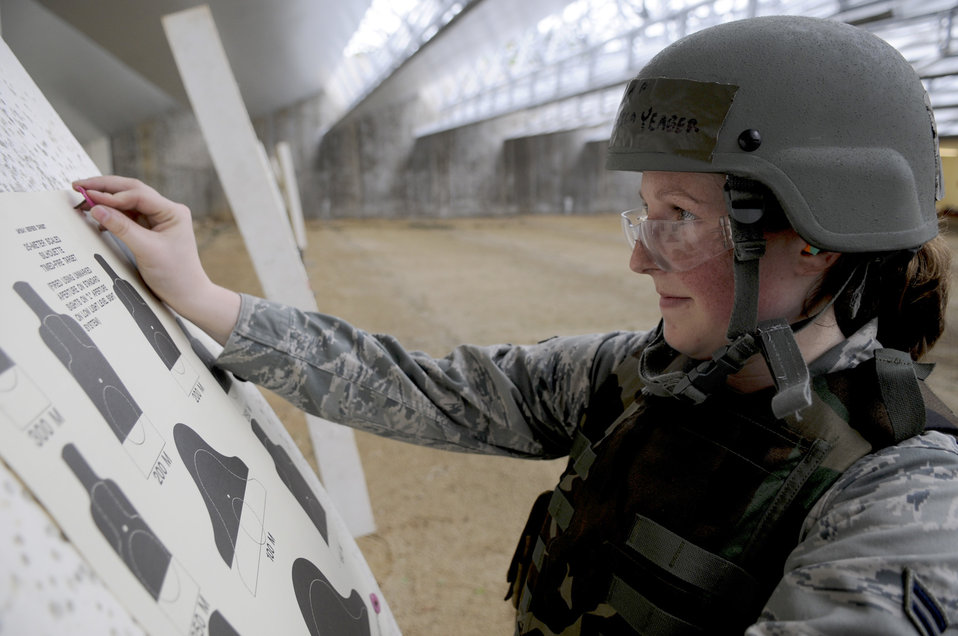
Combat arms training

Airman 1st Class Jessica Yeager hangs a target June 1, 2011, during combat arms training at Yokota Air Base Japan. Airman Yeager is an aircraft service specialist assigned to the 733rd Air Mobility Squadron at Yokota Air Base, Japan.